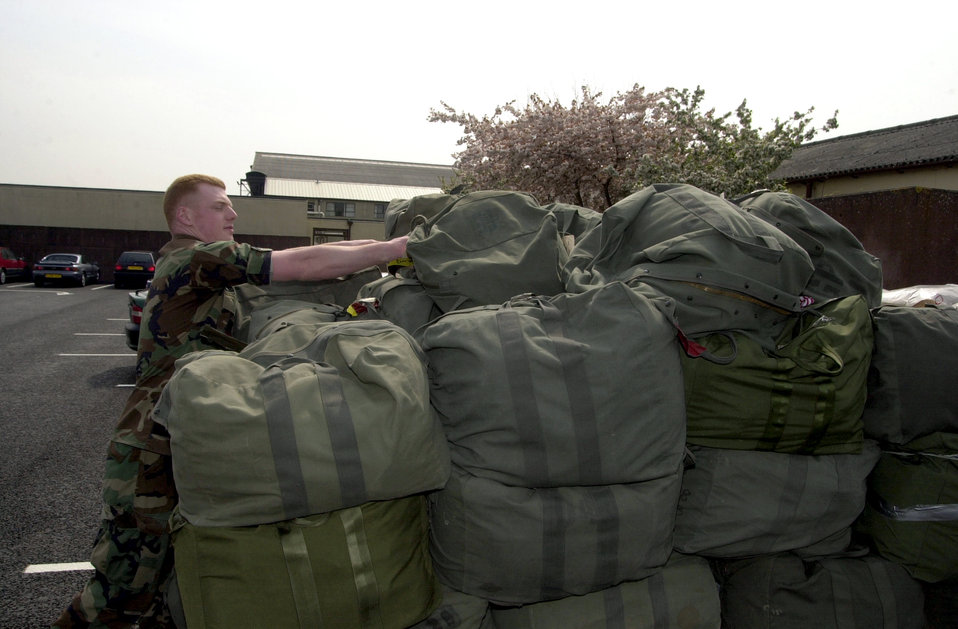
Bomber group heads home

OPERATION IRAQI FREEDOM (AFPN) -- Airman Basic Aaron Young builds a pallet as he prepares to return home from a forward-deployed location. The base was temporarily home to B-52 Stratofortresses used in Operation Iraqi Freedom.